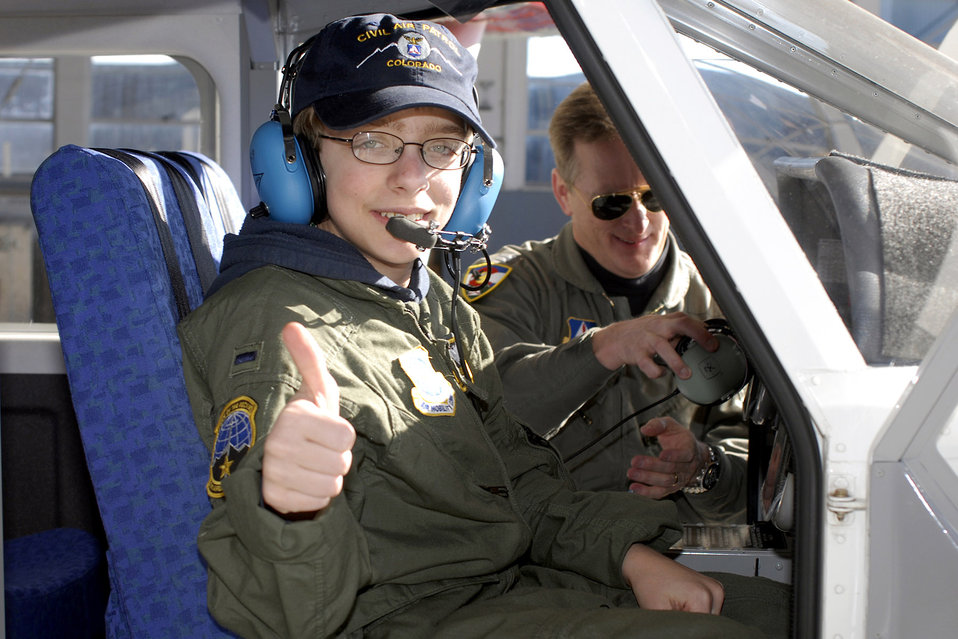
Peterson Airmen grant boy's wish to be a pilot for a day

Zachery Olson gets acquainted with a Civil Air Patrol aircraft Jan. 19 at Peterson Air Force Base, Colo. Zachery is a a 14-year-old suffering from neurofibromatosis who has dreamed of becoming a pilot. While on base, Zachery got a flight in the CAP aircraft, toured a C-21 and was made an honorary pilot through the 311th Airlift Squadron and the Make-A-Wish Foundation.